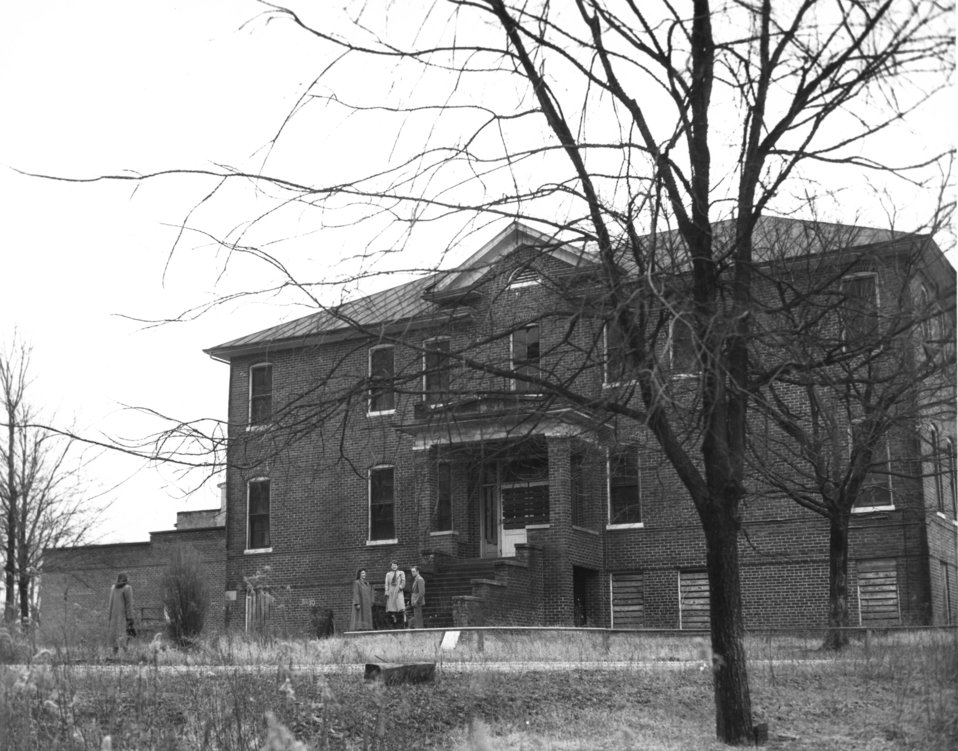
Early settlers at Oak Ridge